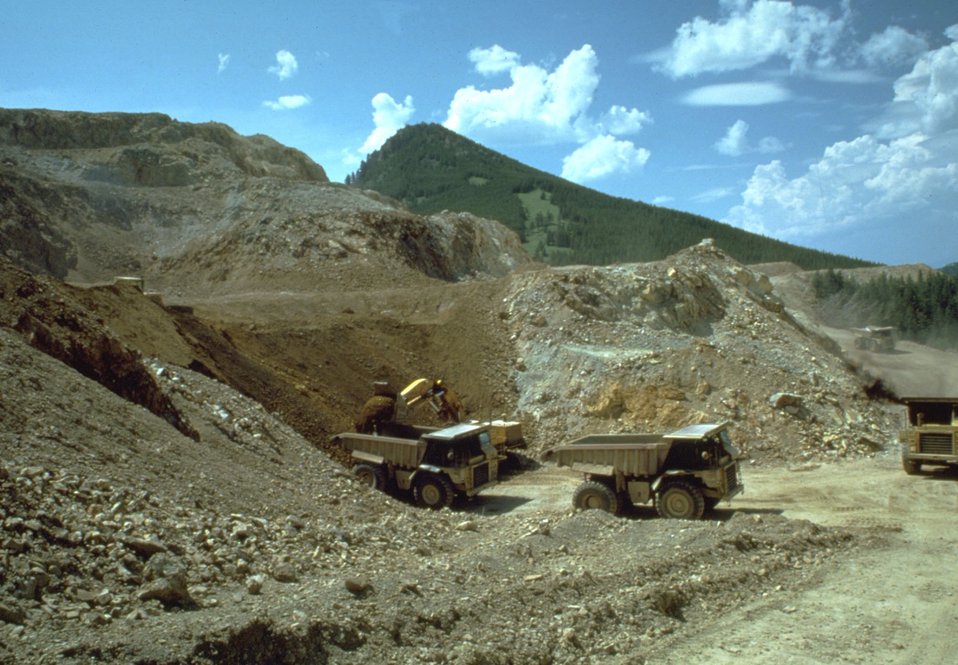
Coal mining operation